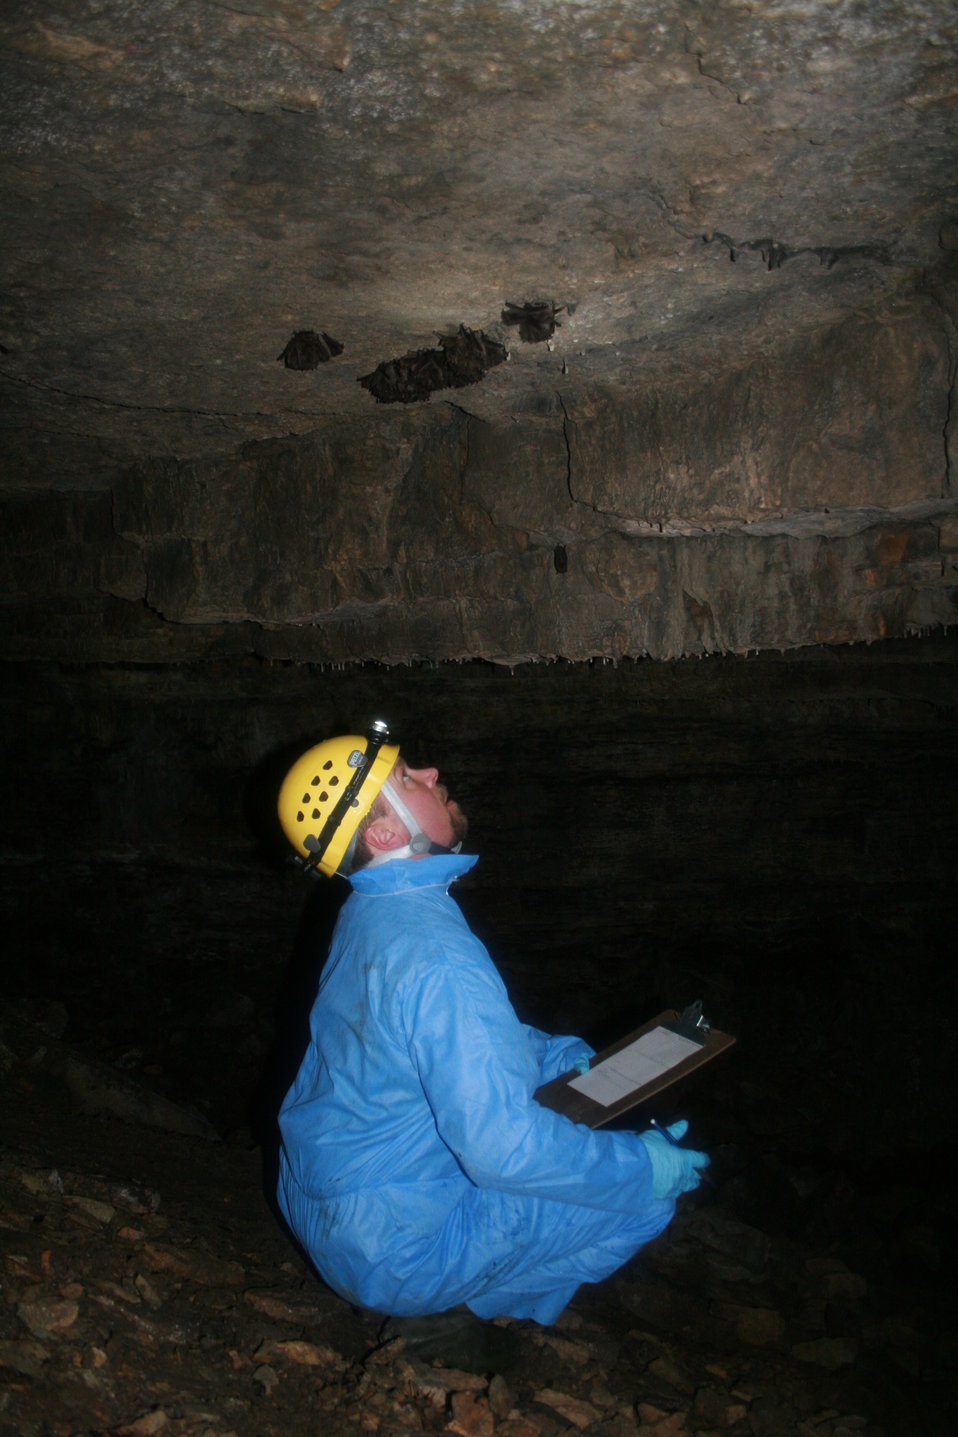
MDC biologist Tony Elliott inspects bats